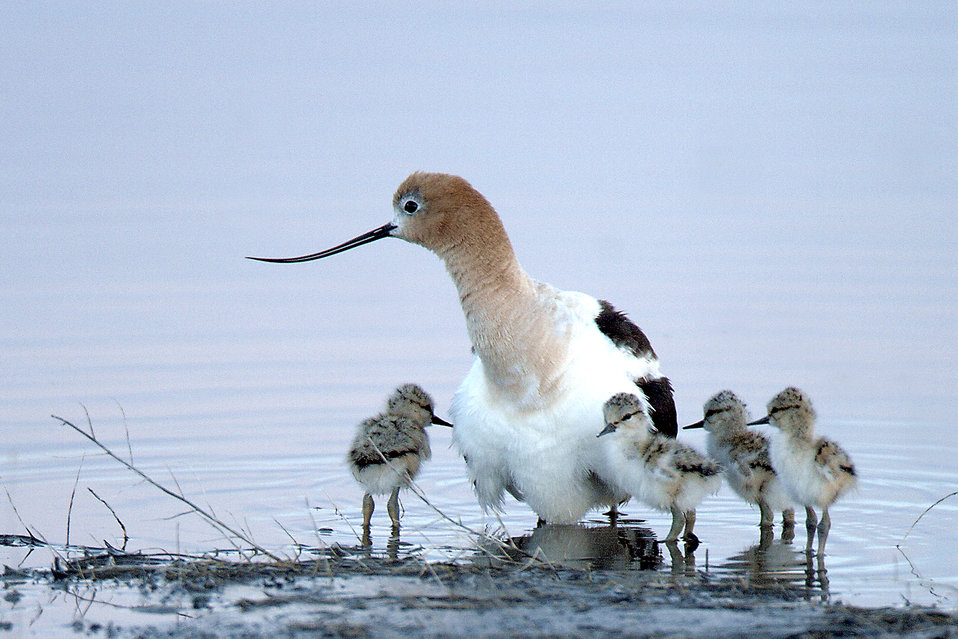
American Avocet chicks and adult

Malheur National Wildlife Refuge. Credit: Barbara Wheeler, barbarawheelerphotography.com